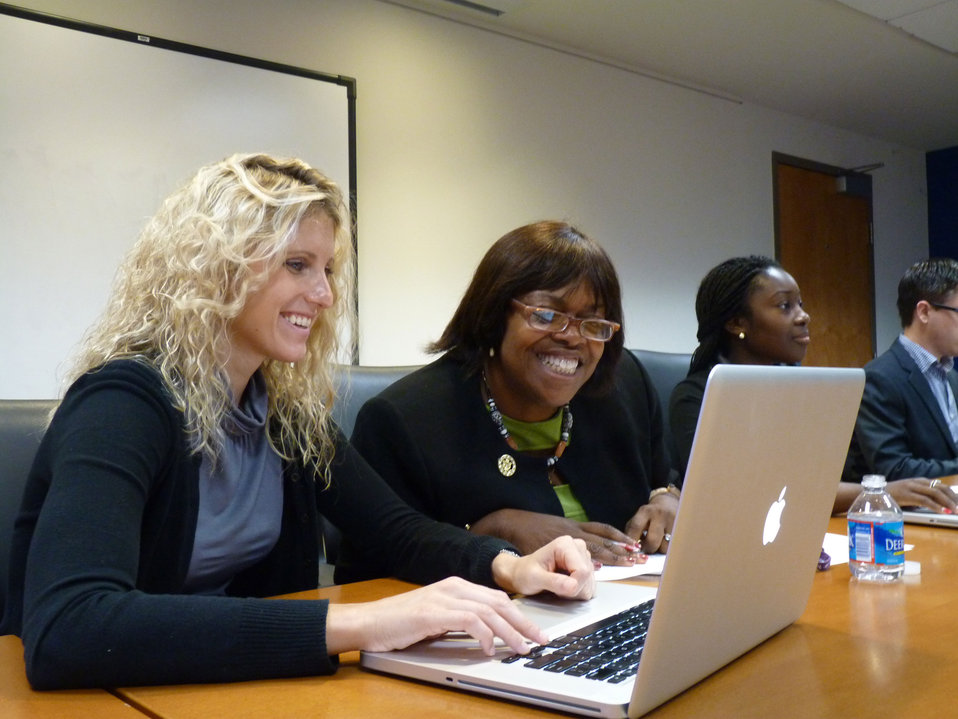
Ambassador Suzan Johnson Cook Participates in a Facebook Chat

Ambassador-at-Large for International Religious Freedom Suzan Johnson Cook participates in a Facebook chat at the U.S. Department of State in Washington, D.C., on August 7, 2012.